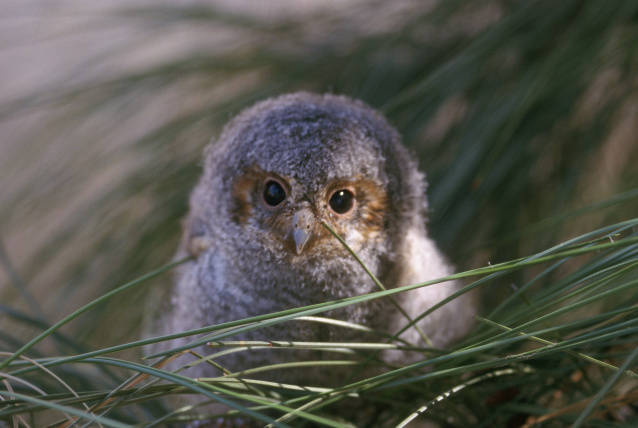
flammulated owl